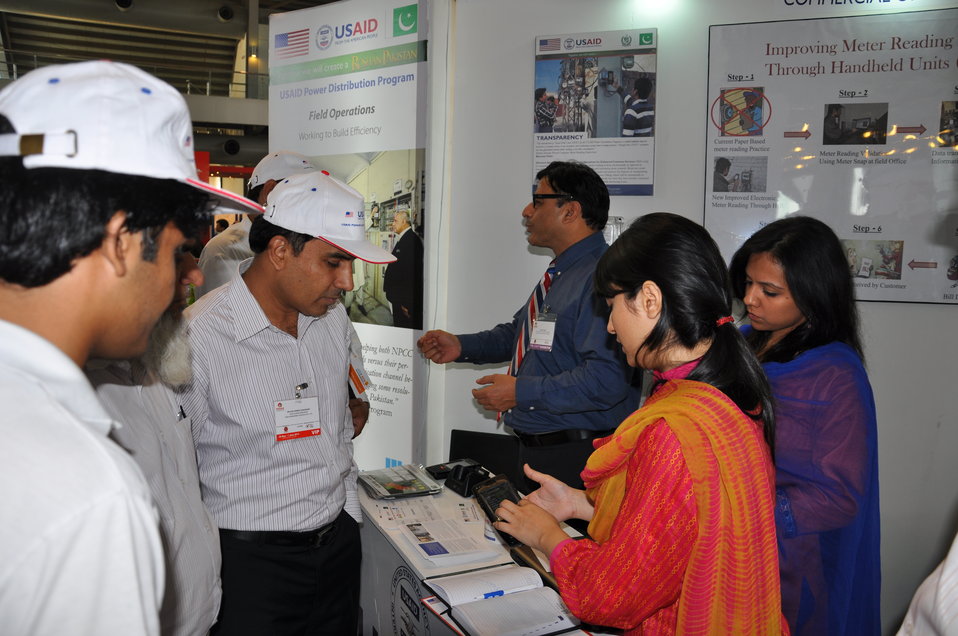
USAID participates in 11th International Pakistan Oil Gas Energy Exhibition

Visitors at the commercial stall are being briefed about the new commercial procedure optimization and new improved meter reading using handheld units.